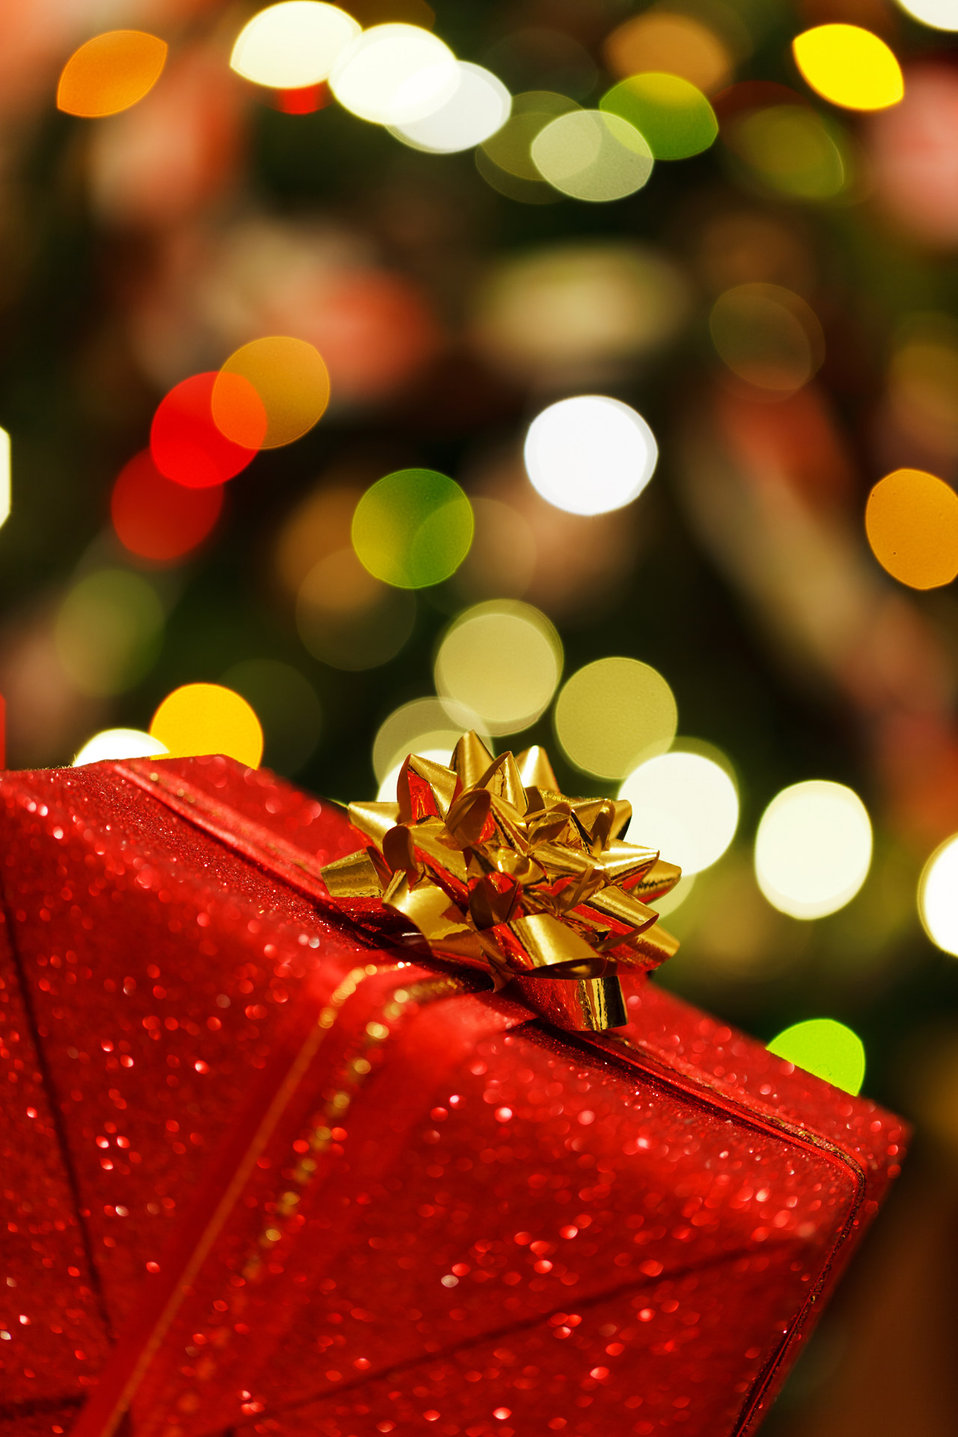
A christmas present with blurred christmas tree lights.